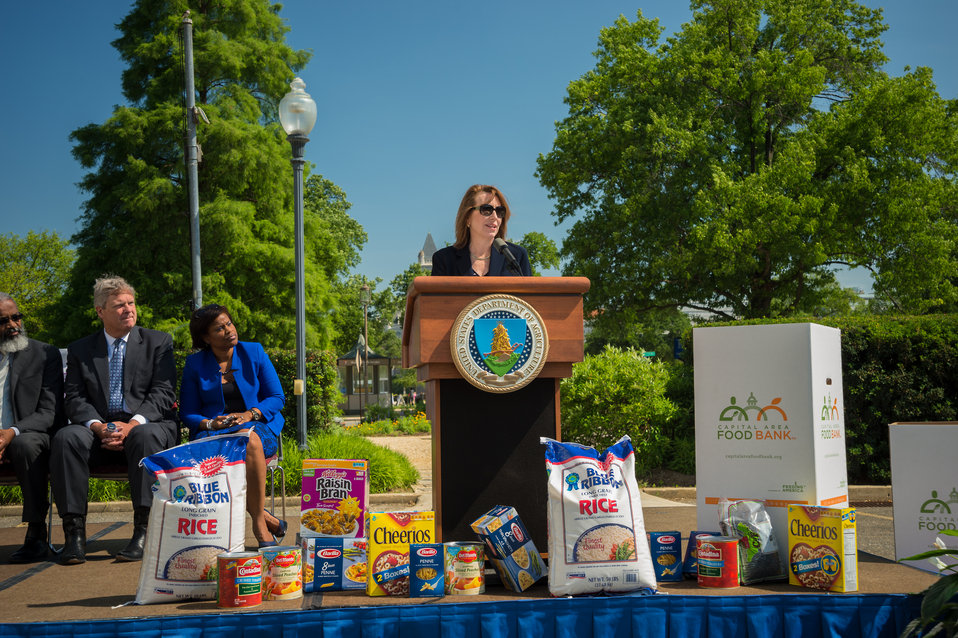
Nancy Roman, President and Chief Executive Officer, Capital Area Food Bank addressed the need for surplus food donations to assist those who suffer from hunger and educating the community about the issues of hunger and nutrition at the 2014 National Feds Feed Families Kick-Off at the United States Department of Agriculture’s (USDA’s) People’s Garden in Washington, DC, Mon. Jun. 2, 2014. On stage behind Ms. Roman are Agriculture Secretary Tom Vilsack and Karen Comfort, National Program Manager, Feds Feed Families.